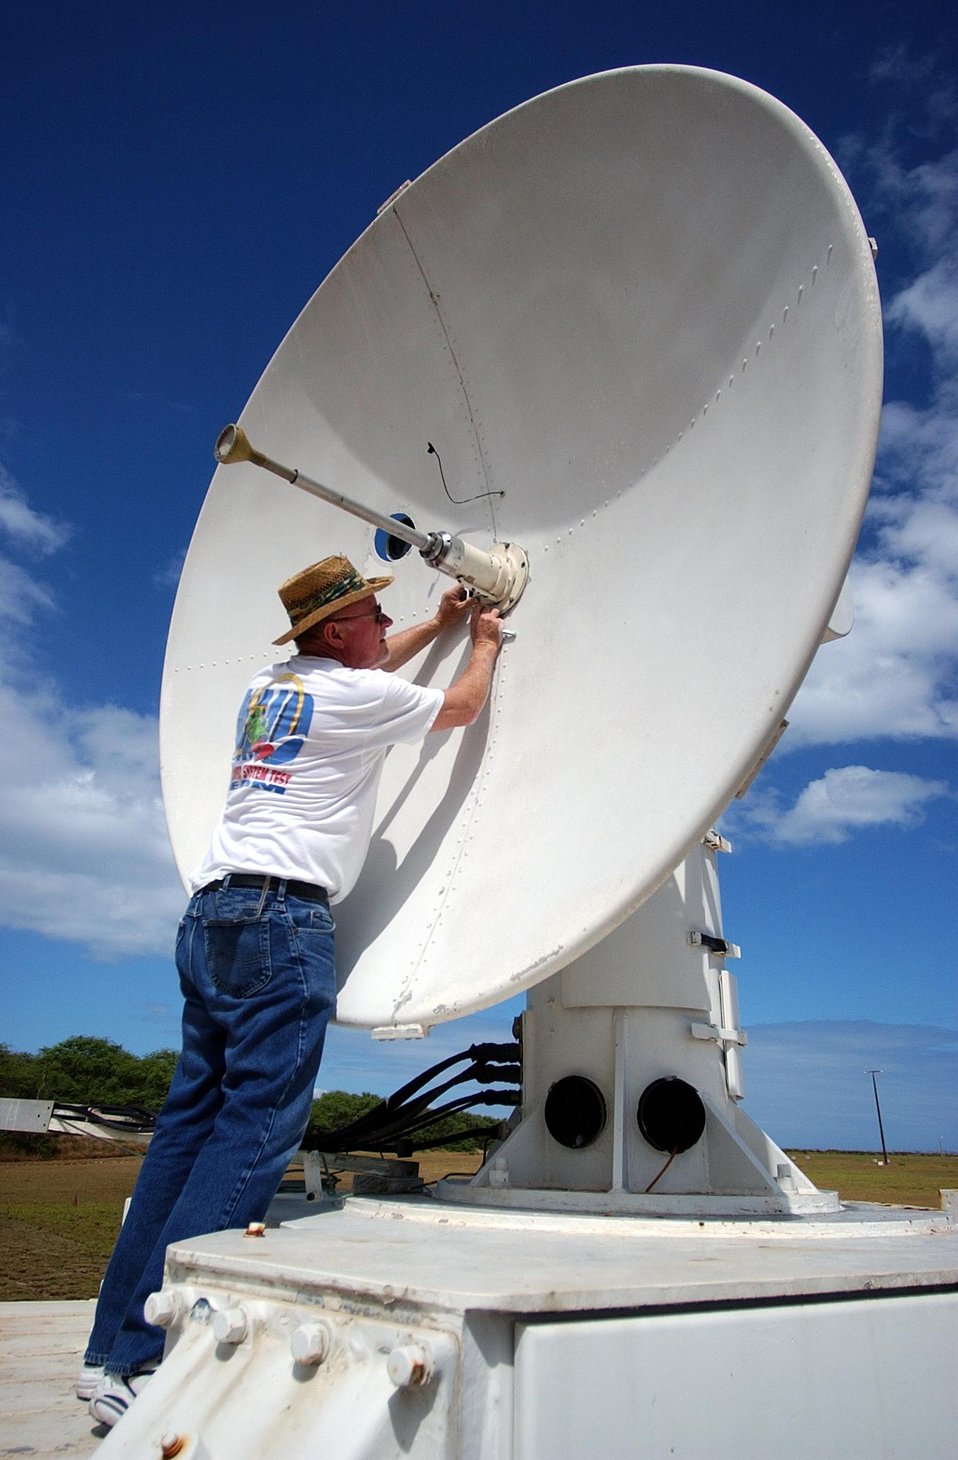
TECHNICIAN INSTALLING A MOTOR ASSEMBLY ON A TRACKING RADAR IN PREPARATION FOR A BALLOON LAUNCH.

WEATHER BALLOONS ARE EQUIPPED WITH REFLECTORS AND LOCATORS THAT ALLOW SCIENTISTS TO TRACK THEM UNTIL THEY EXPAND AND ULTIMATELY POP AT 12,000 FEET. SANDIA'S KAUAI TEST FACILITY, OPERATED FOR DOE, IS ON THE U.S. NAVY'S PACIFIC MISSILE RANGE FACILITY ON THE ISLAND OF KAUAI, HAWAII. SANDIA SCIENTISTS AND TECHNICIANS AT KTF, CONDUCT ROCKET FLIGHT TEST EXPERIMENTS RANGING FROM OFFENSIVE AND DEFENSIVE WEAPONS TESTING TO ATMOSPHERIC STUDIES AND HIGH TECH STAR GAZING.